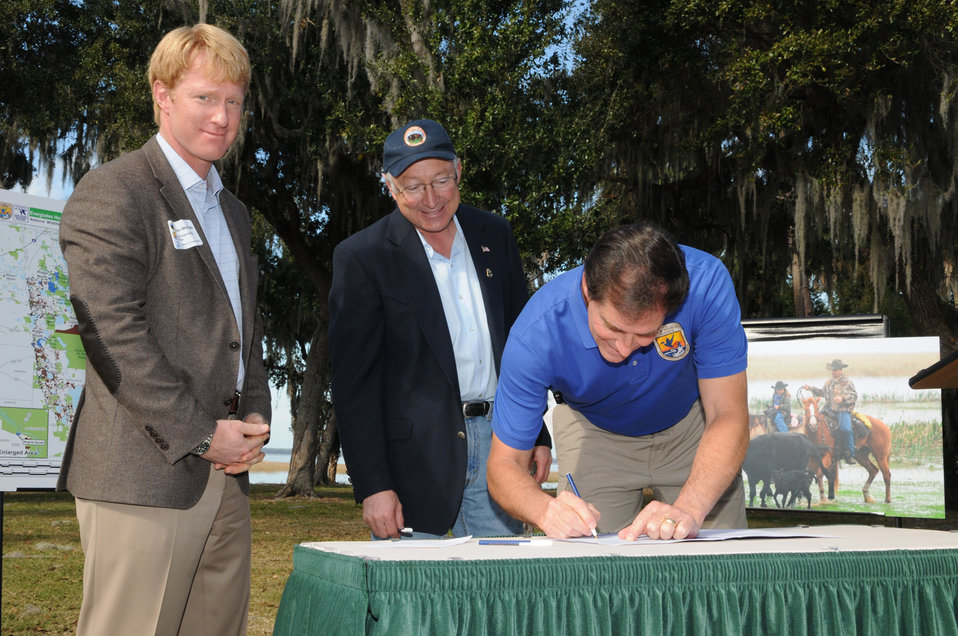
Dan Ashe Signs Document at Everglades Headwaters Event